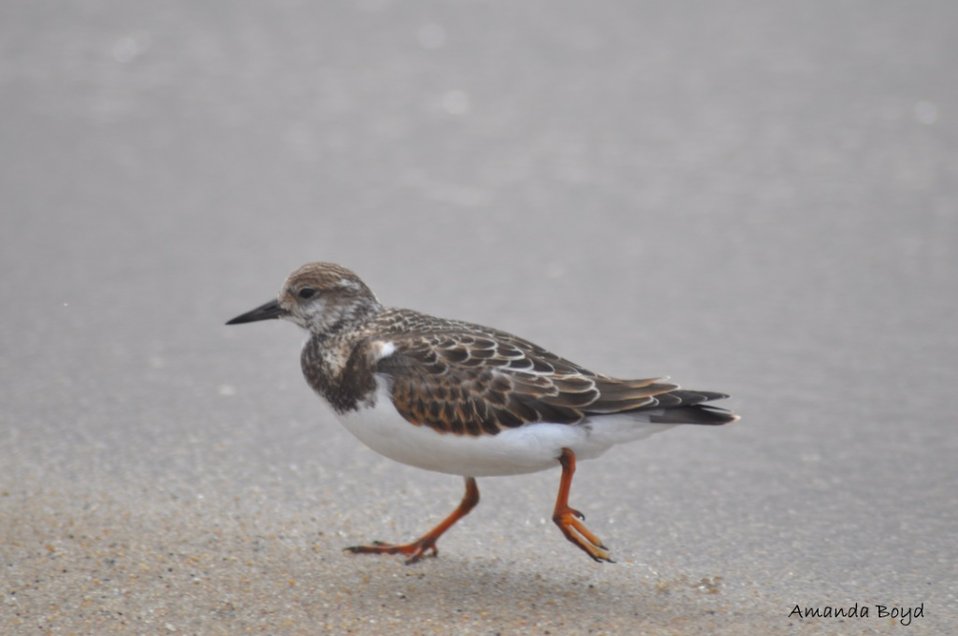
ruddy turnstone

Nantucket National Wildlife Refuge